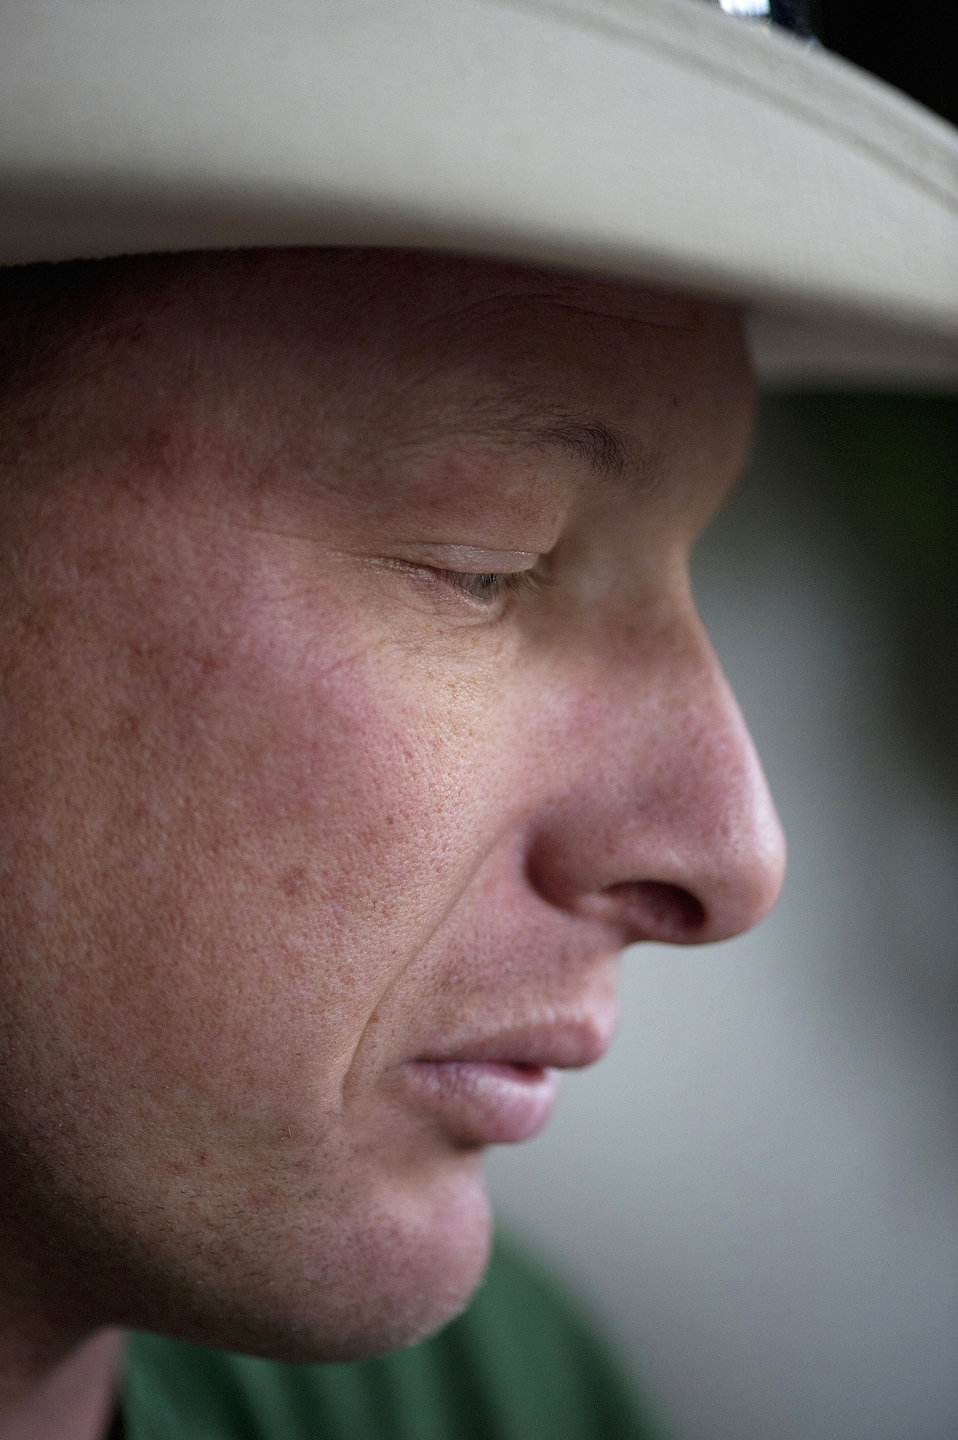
Warrior Wellness Program

U.S. Army Sgt. Dale Chick thinks about his experiences in Iraq at the equestrian center April 27, 2012, at the U.S. Air Force Academy in Colorado Springs, Colo. Chick said volunteering at the stables and working with horses helps him find inner peace and comfort after being deployed in Iraq and Afghanistan.